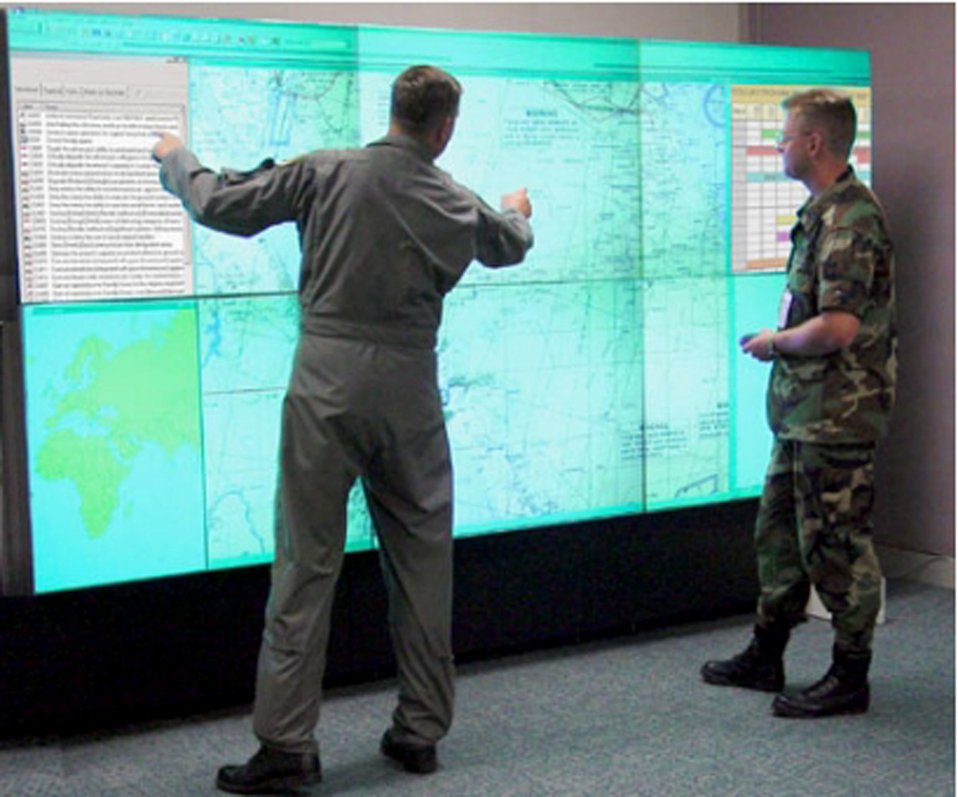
Warfighter's Edge

Two Airmen demonstrate Warfighter's Edge, or WEdge, a new command and control tool designed to automate briefings for aircrews, organizes information and delivers it to users in a tailored, real-time format.